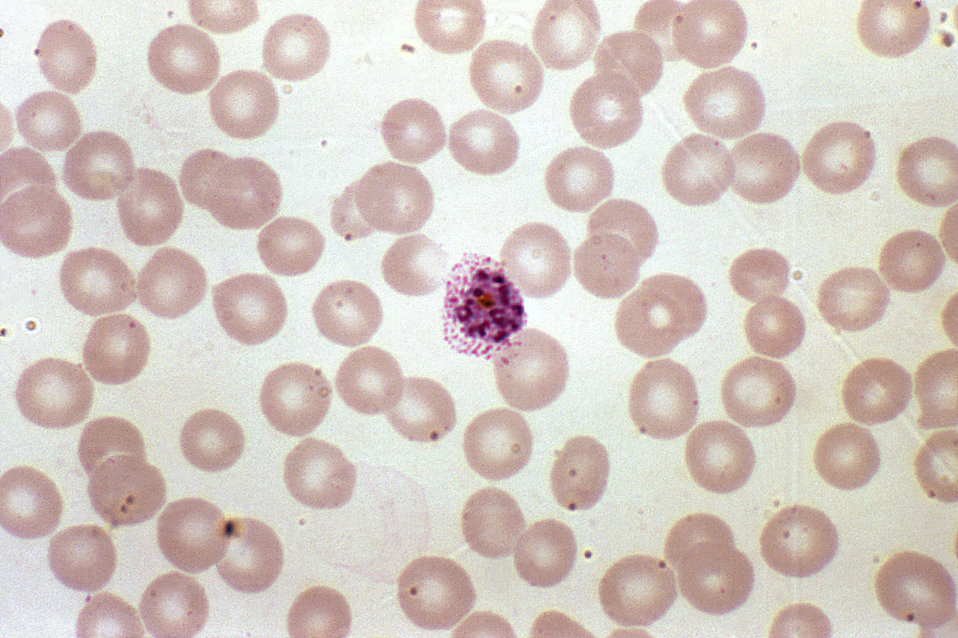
This photomicrograph shows a red blood cell being infected by Plasmodium vivax in it's schizont stage; Magnified 1000X.